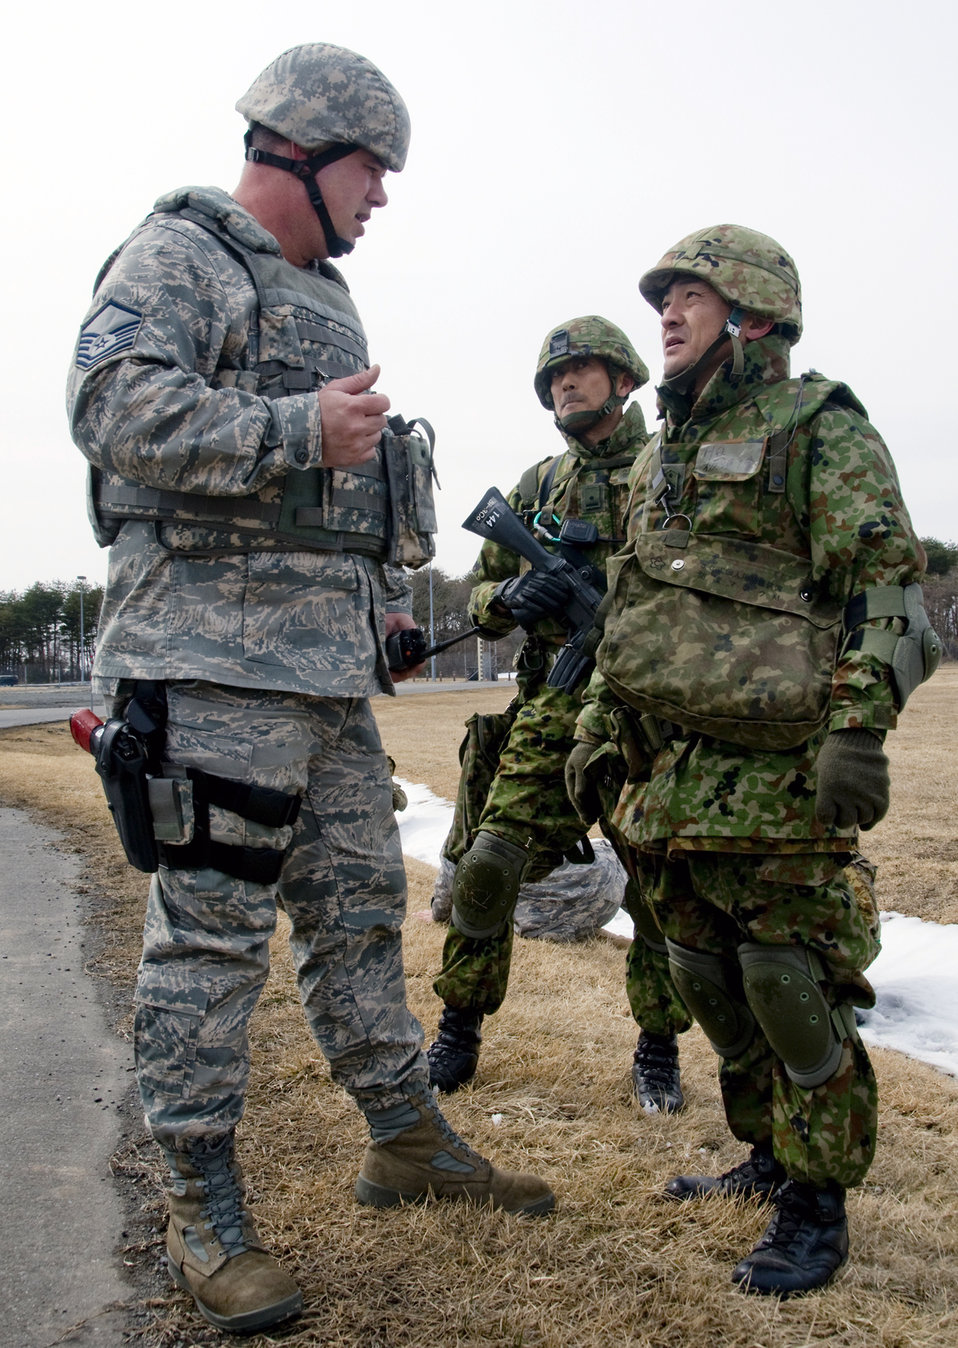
Japan, U.S. forces come together to Guard, Protect

Master Sgt. Robert Loughmiller discusses tactics with Japan Ground Self-Defense Force members Master Sgt. Masato Hagaki and 2nd Lt. Fumiko Aizu during Exercise Guard and Protect March 13 at Misawa Air Base, Japan. The 24-hour exercise assessed the U.S. and Japanese forces' ability to combine and protect the installation, base population and warfighting assets. Sergeant Loughmiller is assigned to the 35th Security Forces Squadron.